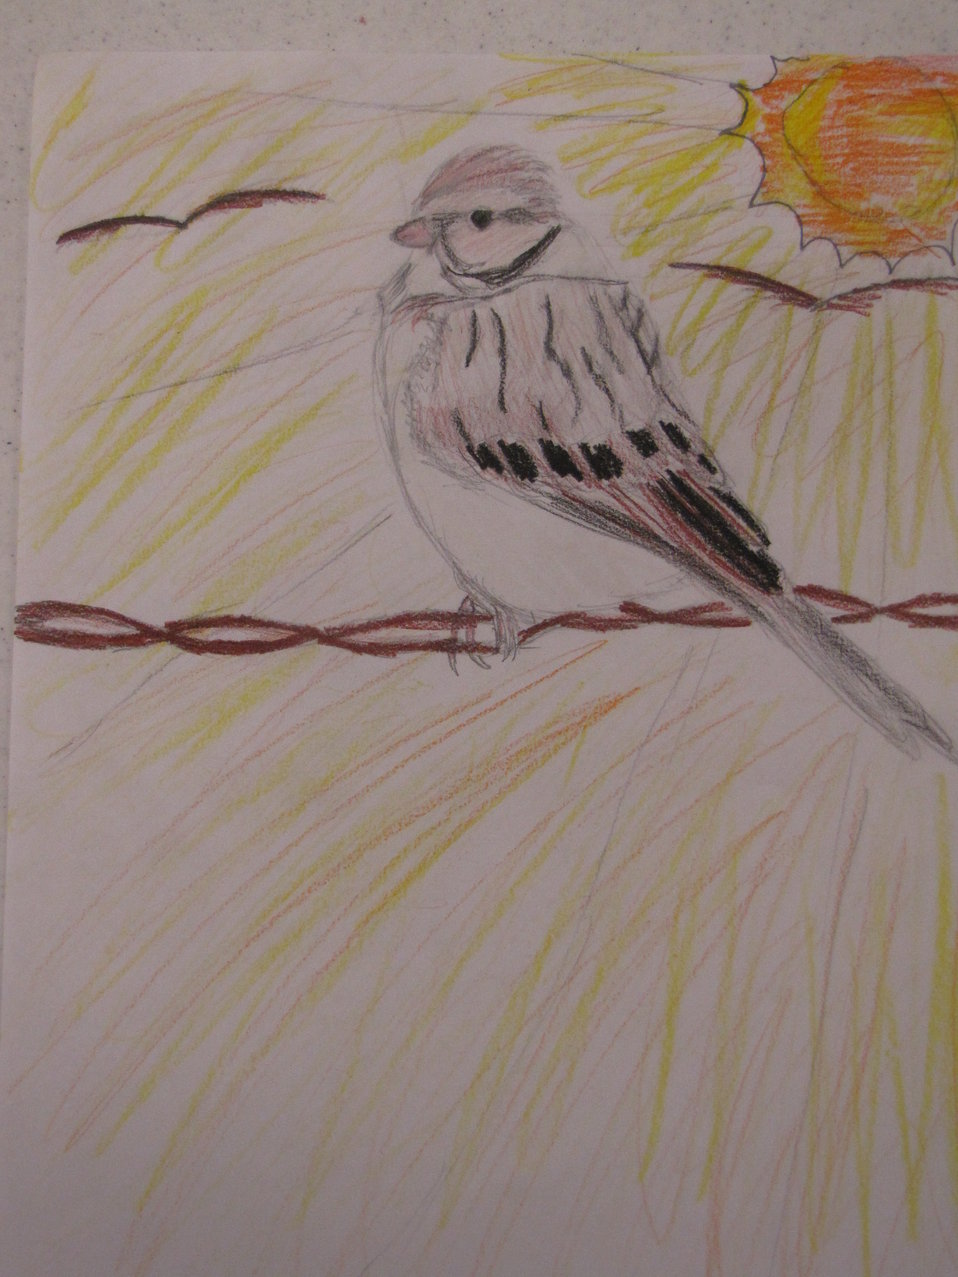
Chipping sparrow, by Rachel Butts - 3rd grade. One of the class winners for the annual Bird Banner competition. Community school kids draw and color migratory birds and 90 of the winners from over 1000 entries are turned into poster-sized banners to hang down main street of Brigham City this summer.